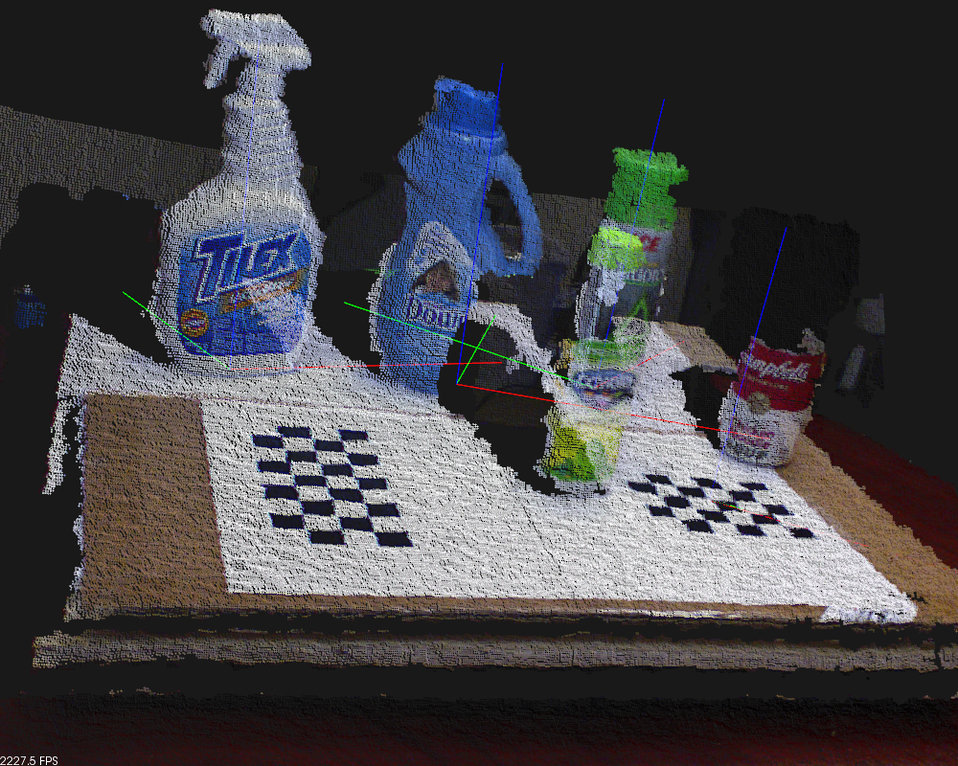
Vision; Perception Challenge

This 'robot's eye view' shows how some common household objects appear through the vision system being used in the Perception Challenge. The objects are fuzzy because the cameras have limited resolution. However, the images do provide information on depth (distance of every point on an object). The checkered patterns help to define and verify objects in space.